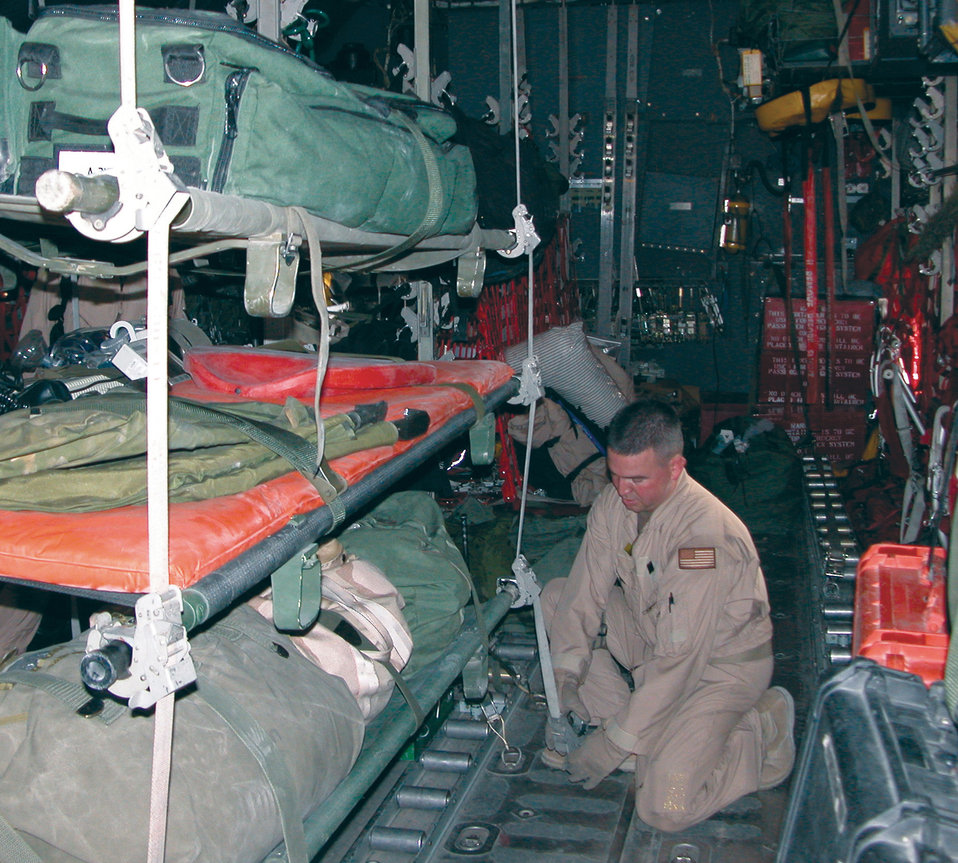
Medics, aircrews work together to save lives

SOUTHWEST ASIA -- Master Sgt. Maxie Gainey secures litters holding aeromedical evacuation supplies during a mission. He is a C-130 Hercules loadmaster deployed from Pope Air Force Base, N.C.